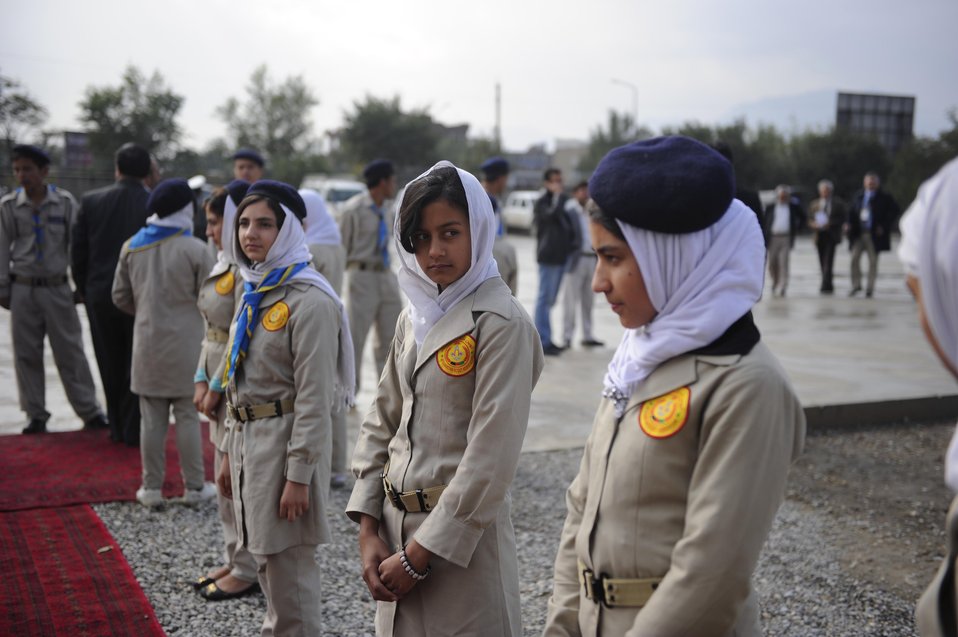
Participants in the Ghazi School inauguration wait to welcome arriving guests.

U.S. Deputy Ambassador to Afghanistan James B. Cunningham, Afghan Minister of Education Abdul Rahim Wardak and visitng former U.S. Ambassador to Afghanistan Zalmai Khalilzad officially inaugurated the newly rebuilt Ghazi High School in West Kabul October 23, 2011. Former alumni of the school include both Ambassador Khalilzad and Afghan President Hamid Karzai. The school was destroyed during 30 years of fighting in Afghanistan, and was refurbished by the U.S. Agency for International Development. (Department of State)